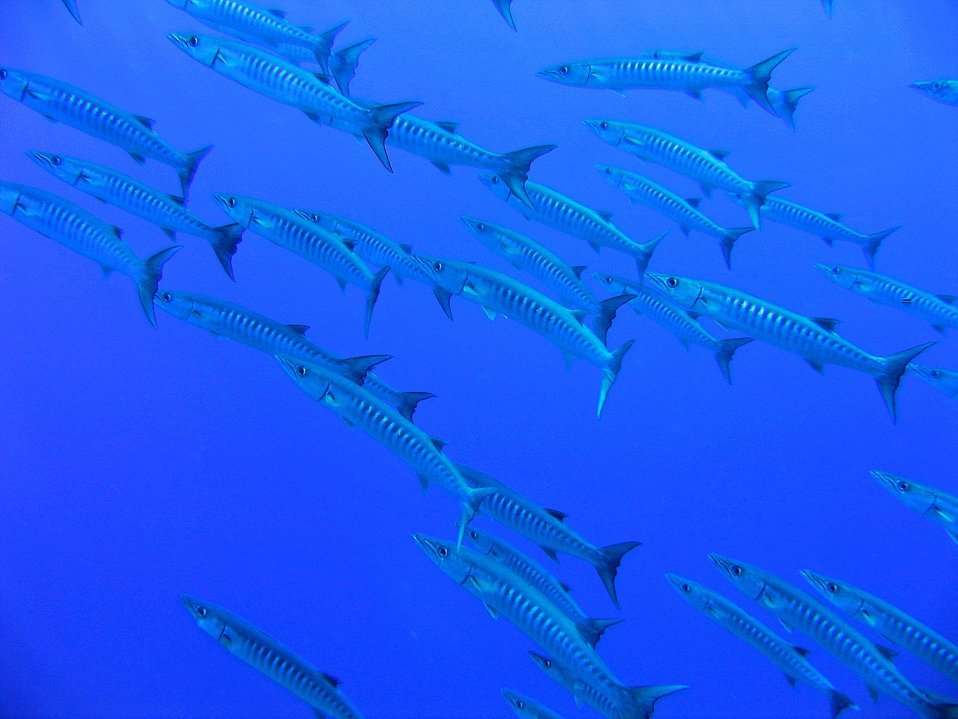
What goes up --- photo #1 of sequence. A school of barracuda.